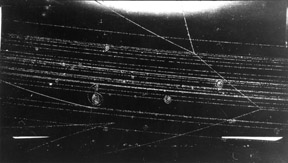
Nuclear interactions in a bubble chamber, as a result of the bombardment of liquid hydrogen by a beam of 2.85 Bev protons from the Cosmotron. c. 1960